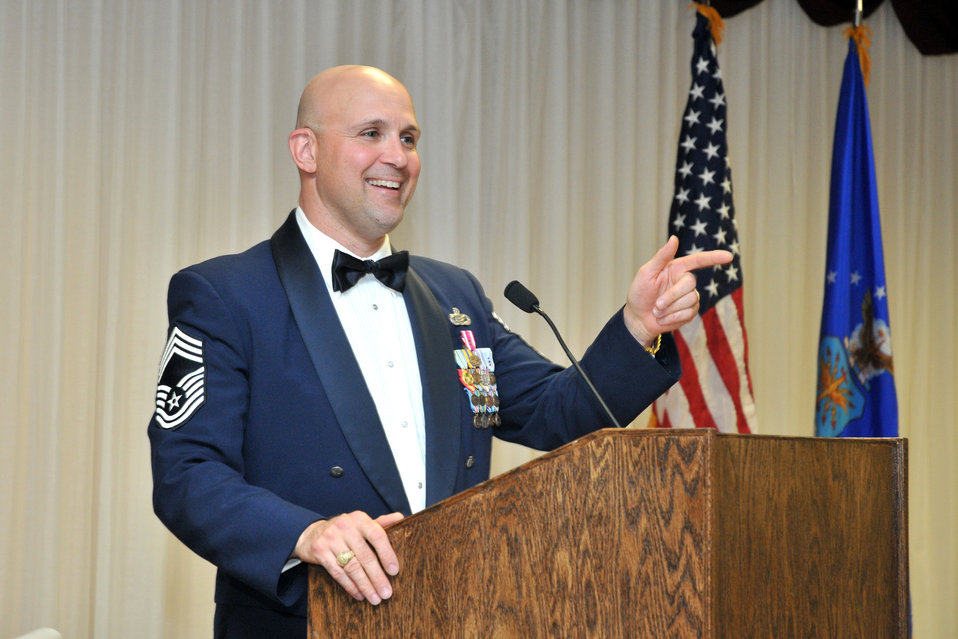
Keesler chief to compete in Warrior Games

Chief Master Sgt. Damian Orslene speaks at an Airman Leadership School graduation March 30, 2010, at Keesler Air Force Base, Miss. Chief Orslene is competing in the inaugural Warrior Games May 10 through 14, 2010, in Colorado Springs, Colo. Chief Orslene was injured while deployed to Iraq. He is the 81st Training Support Squadron superintendent.